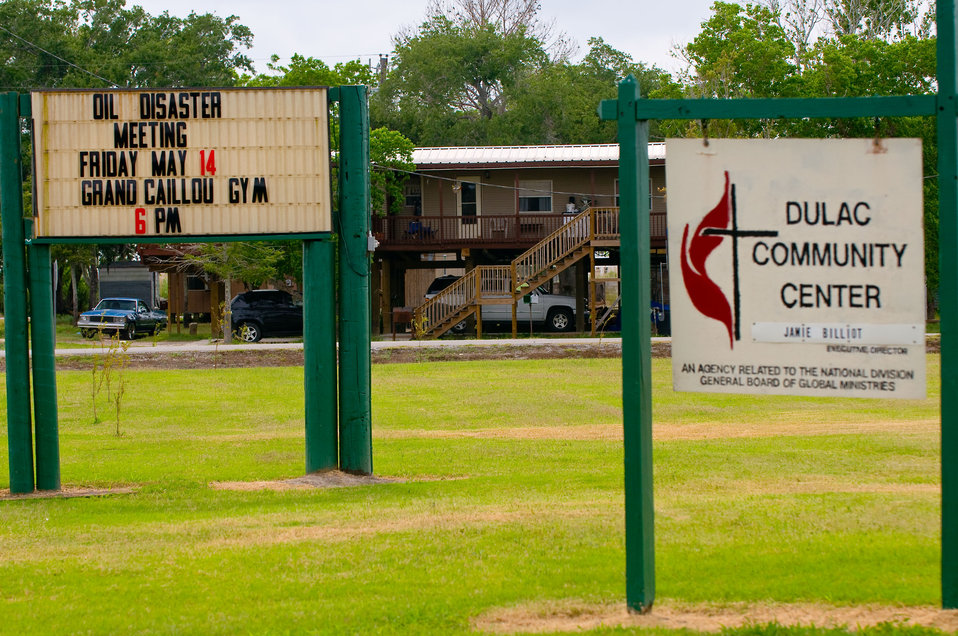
Community Meeting in Dulac, La.

Photo taken May 13th, USEPA photo by Eric Vance